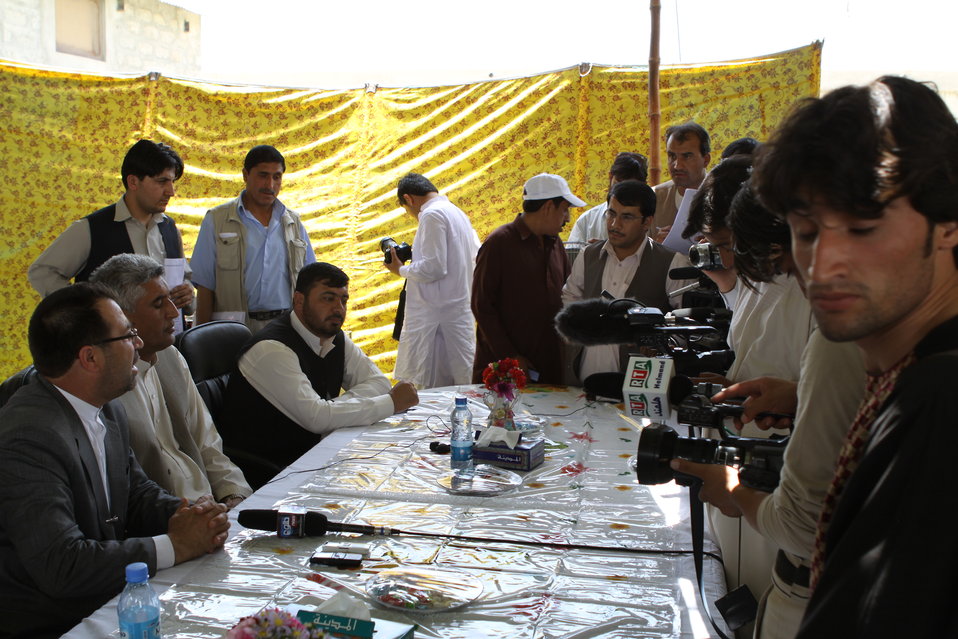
Bolan Poultry Farm